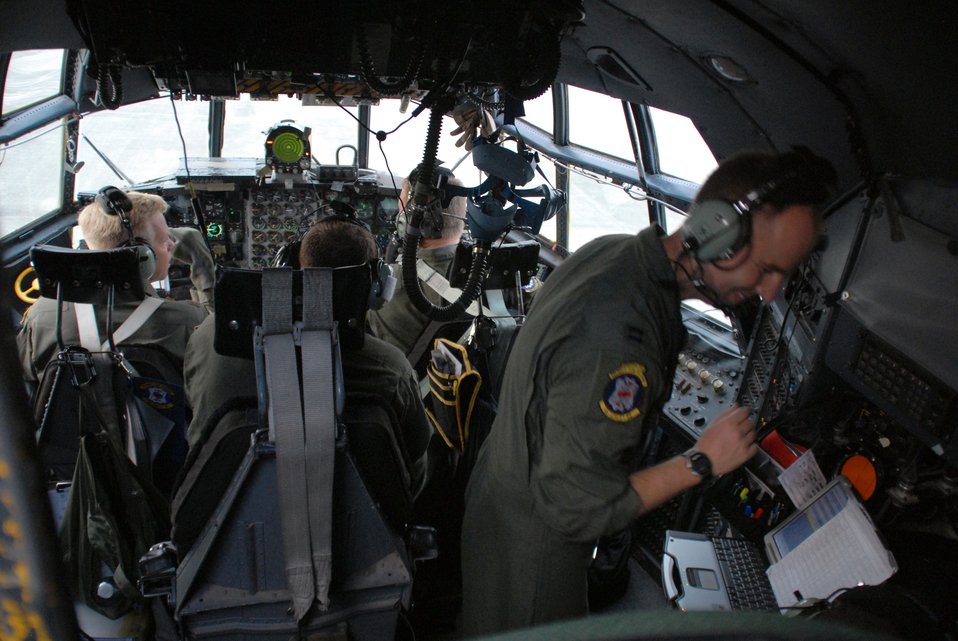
Four Little Rock aircrews take part in largest joint exercise formation

(From left) Maj. Lars Johnsen, Staff Sgt. Thomas Brown, Capt. Jason Robinson, Capt. Brian Shea and 1st Lt. Stefan Idso prepare for their second mission during a joint forcible entry exercise June 22, 2010 at Pope Air Force Base and Fort Bragg, N.C. The crew are assigned to the 53rd Airlift Squadron, Little Rock AFB, Ark.